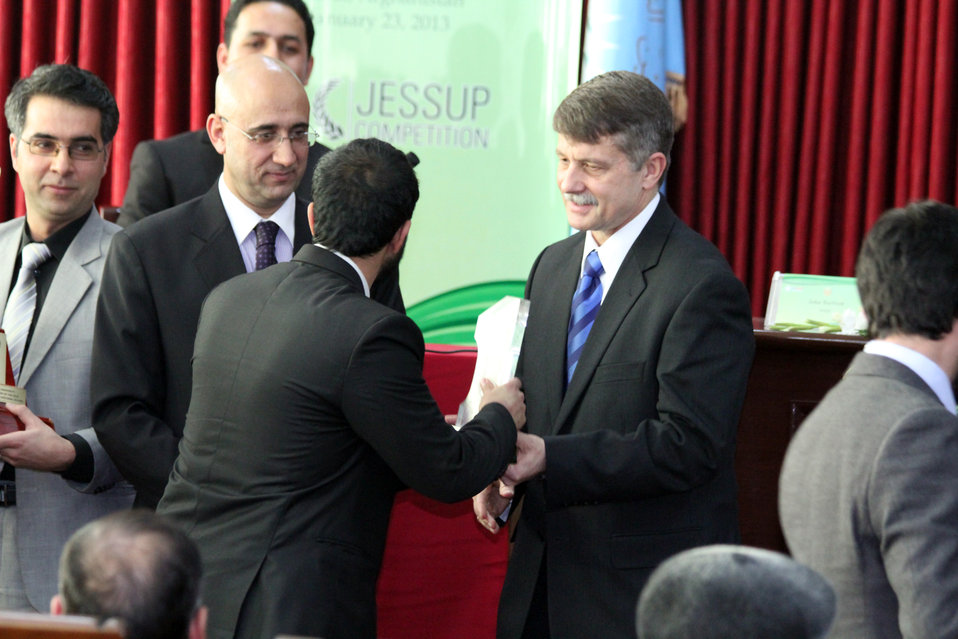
Afghanistan Final National Round of the 2013 Philip C.Jessup International Law Moot Court Competition